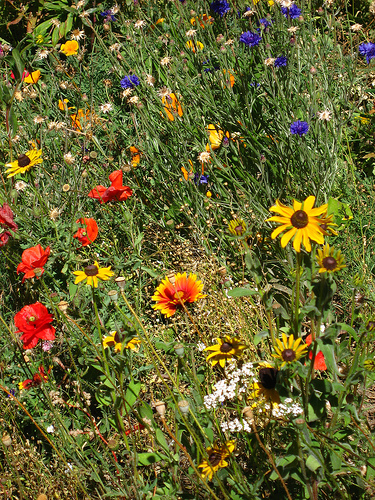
Wildflowers